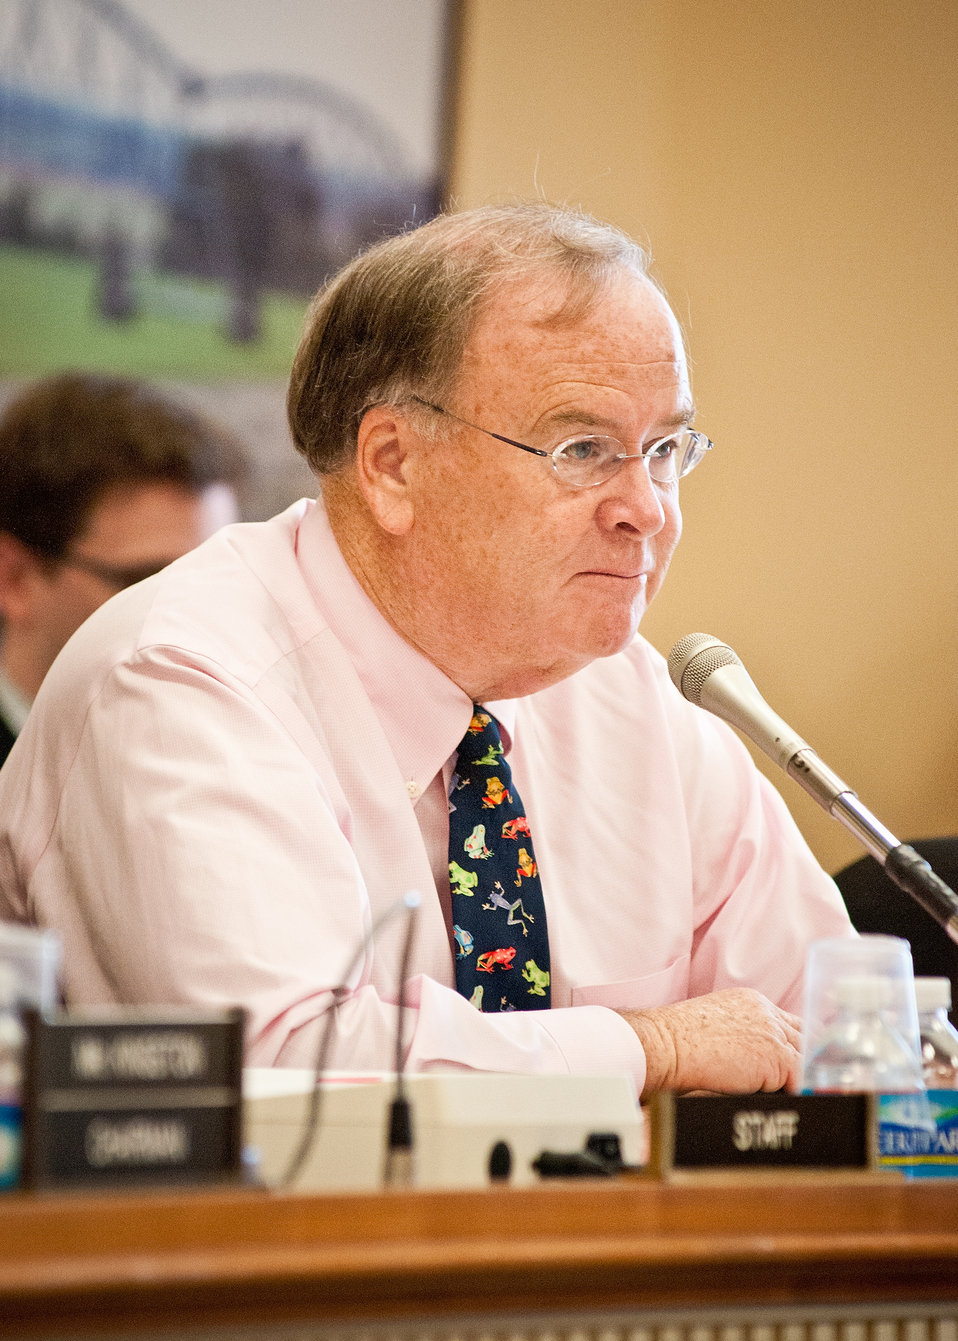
Congressman Sam Farr, California posed questions to Ed Avalos, Under Secretary, Marketing and Regulatory Programs and representatives of the Marketing and Regulatory Program agencies testifying before the House Agriculture Appropriations Subcommittee on Capitol Hill on the agencies fiscal year 2013 budget requests, in Washington, D.C., on Tuesday, March 6, 2012.